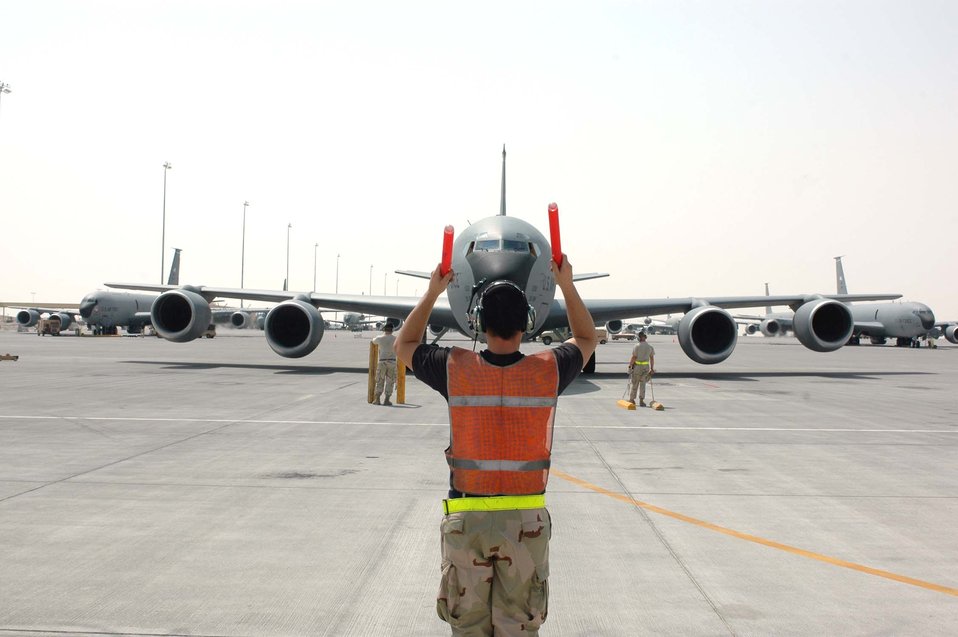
Deployed unit turns fuel into freedom

Senior Airman Mike McGovern marshals a KC-135 Stratotanker to its parking spot with Tech. Sgt. Robert Wade (left) and Senior Airman Neal Sicard (right) standing by to place chocks around the aircraft's tires. The Airmen are assigned to the 340th Aircraft Maintenance Unit in Southwest Asia.